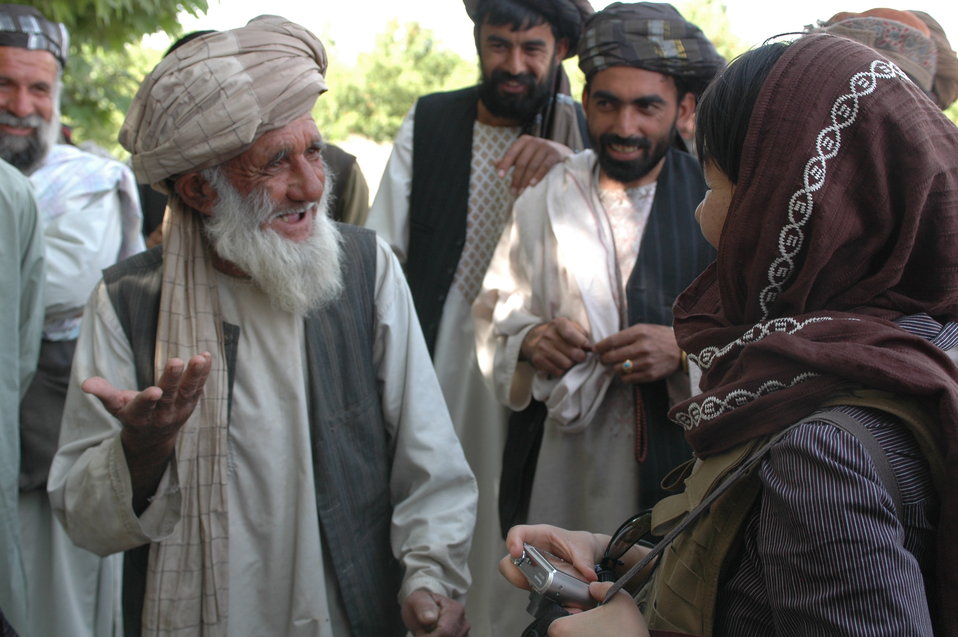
Dr Shah Visits Argandab April 10, 2010